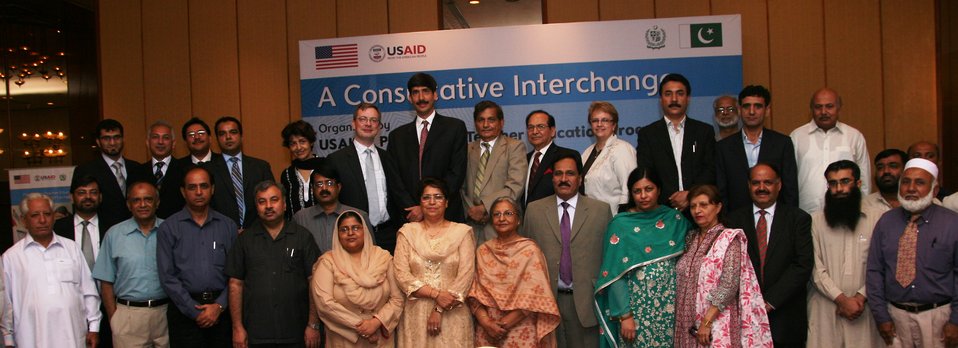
Group Photo

Karachi, July 6, 2011 – Group photo of participants at Pre-STEP's Consultative Interchange . Senior officials from Pakistan’s provincial and federal education departments and educational institutions discussed how to ensure the continuation of reforms in Pakistan’s pre-service teacher education .This initiative is part of the United States commitment to support Pakistan’s efforts to improve the quality of basic education.